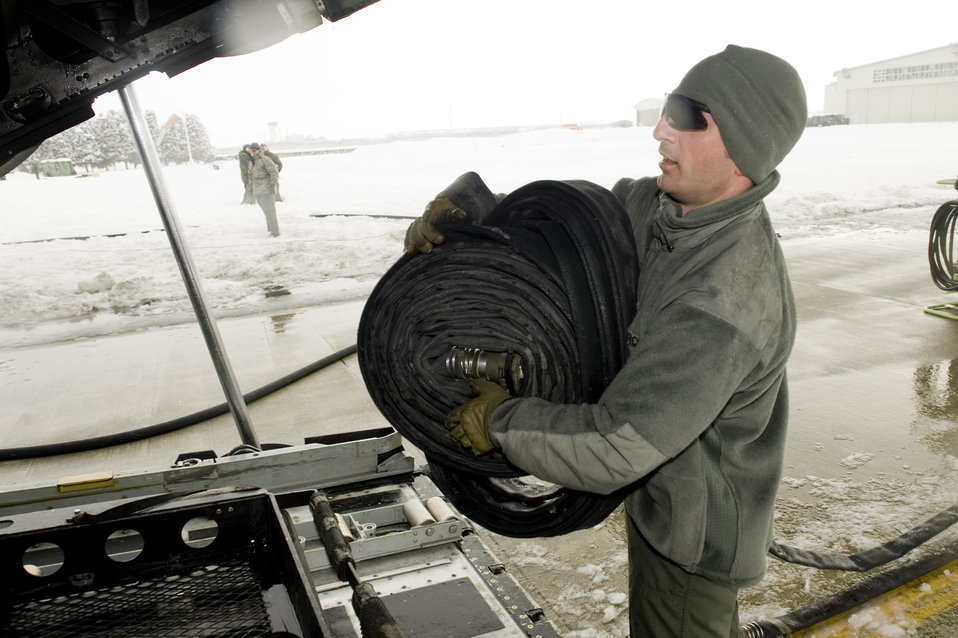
A FARP is ready at Yamagata Airport

Tech. Sgt. Paul Hammer runs a fuel line to a MC-130P Combat Shadow March 17, 2011, at Yamagata Airport, Japan, during efforts to establish a forward area refueling point there. FARPs allow aircraft to operate at further distances by allowing the aircraft to refuel where no fuel typically exists. The fuel at Yamagata Airport will be used for American search-and-recovery teams during Japan's earthquake and tsunami relief. Sergeant hammer is with the 353rd Special Operations Group at Kadena Air Base, Japan.